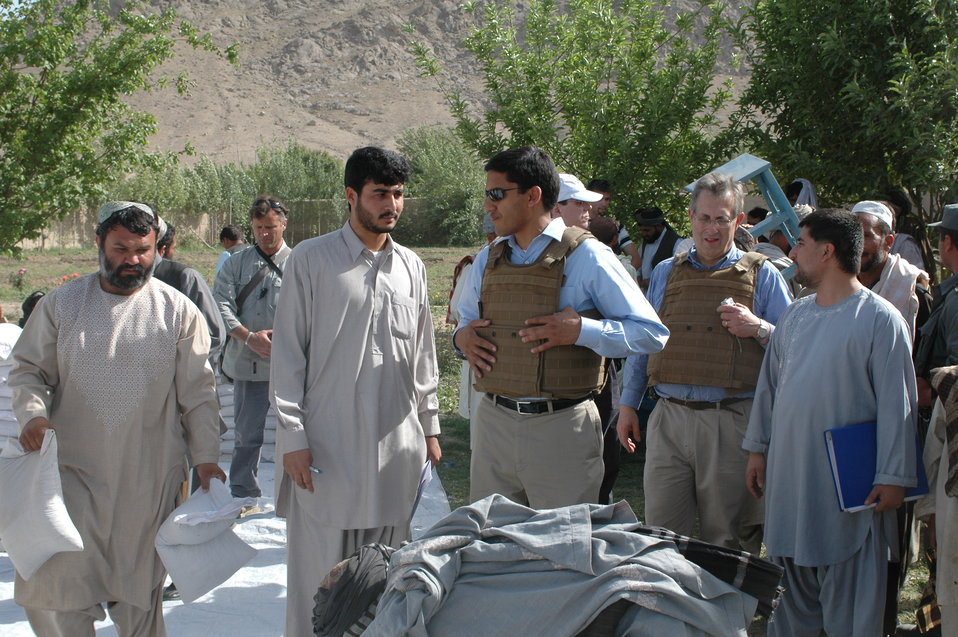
Dr Shah Visits Argandab April 10, 2010